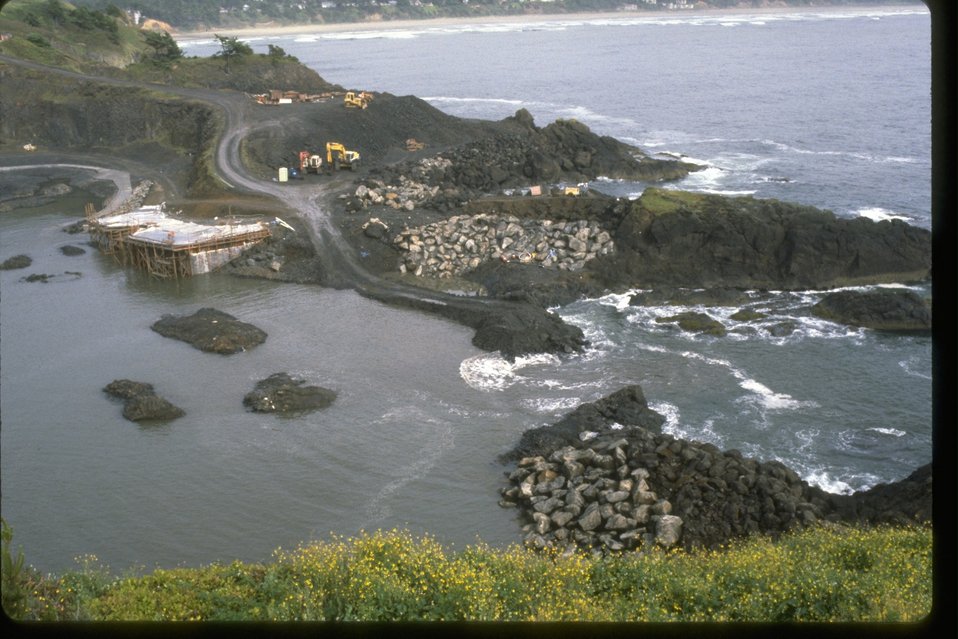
Sea wall is breached at Quarry Cove.